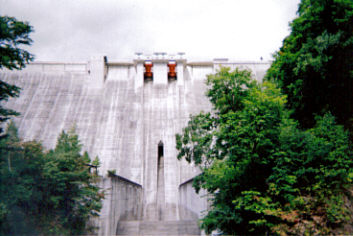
Dam